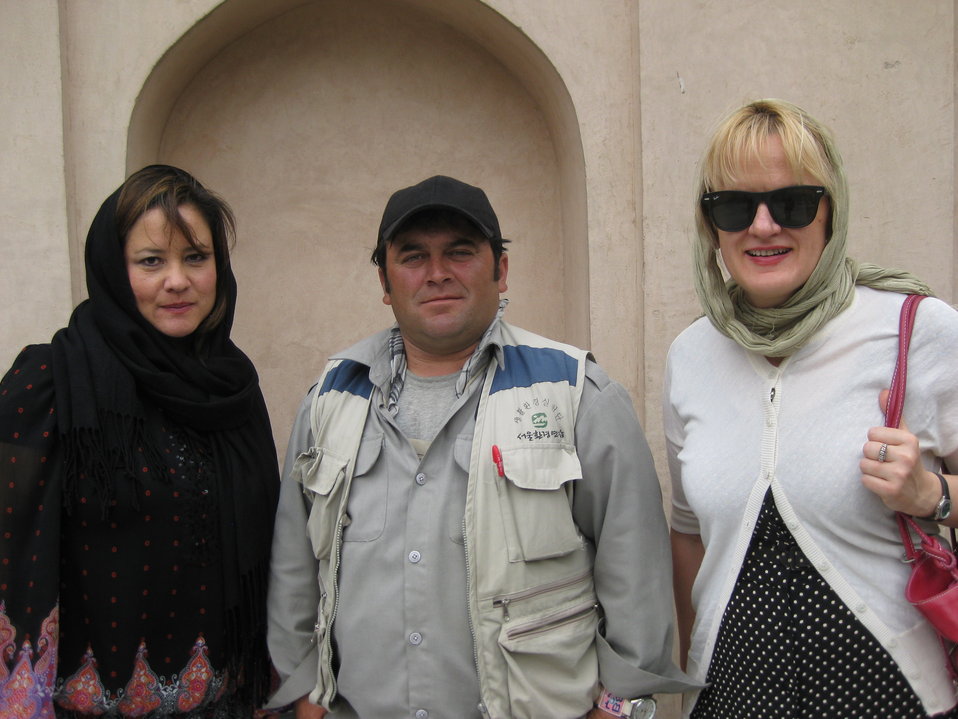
Afghan Youth Voices 101